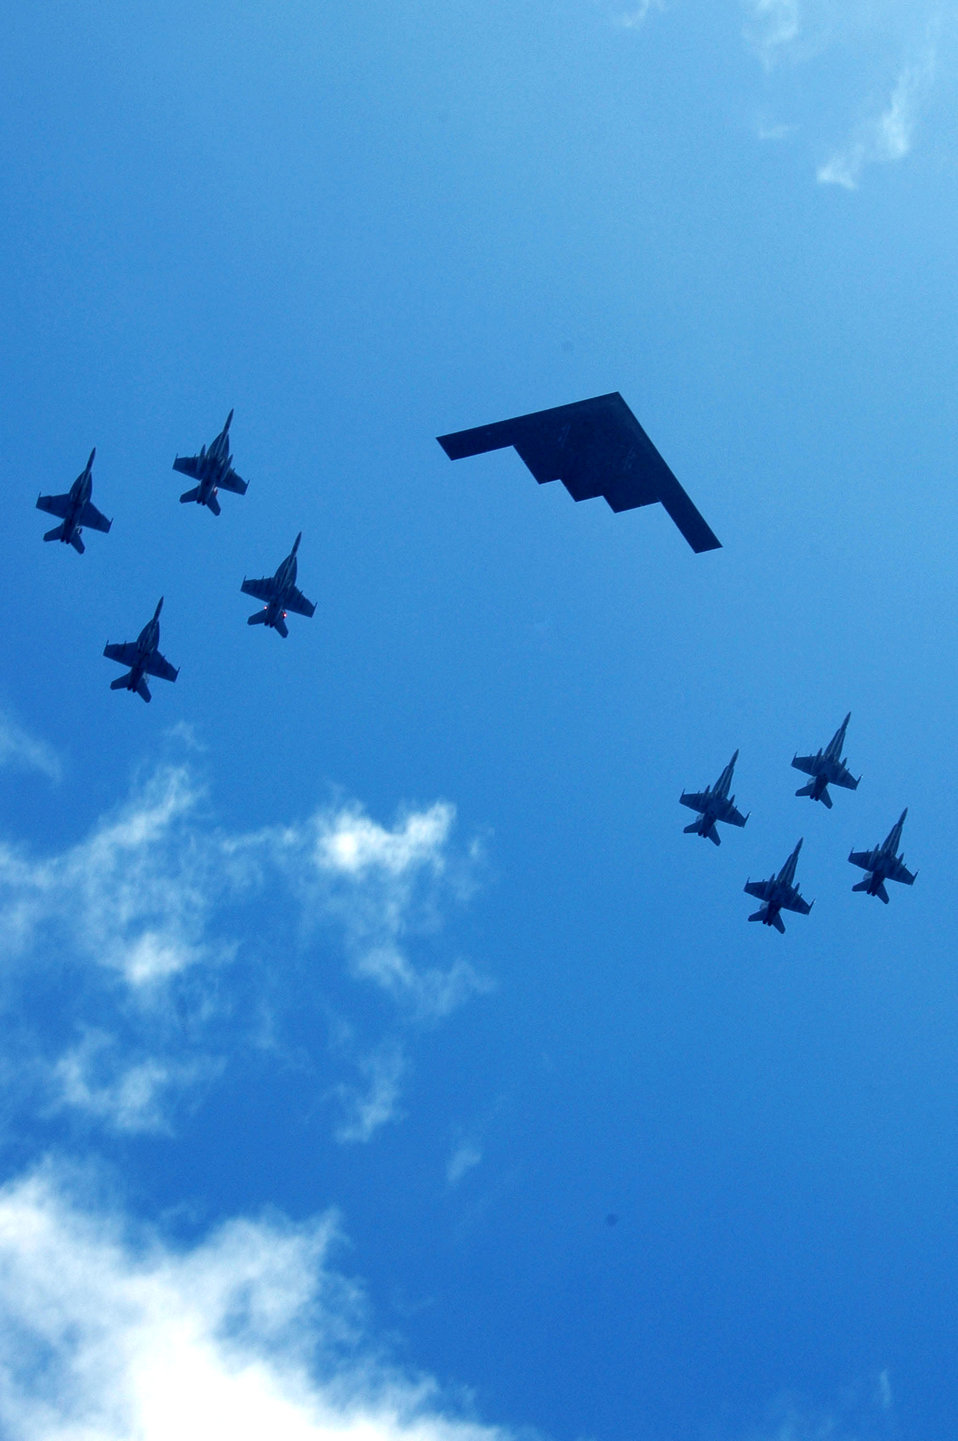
Joint operations in the Pacific

A B-2 Spirit leads other aircraft from the Air Force, Navy and Marine Corps as they fly over the western Pacific Ocean on Sunday, June 18, to kick off Exercise Valiant Shield 2006. The joint exercise consists of 28 naval vessels, more than 300 aircraft and approximately 20,000 servicemembers.